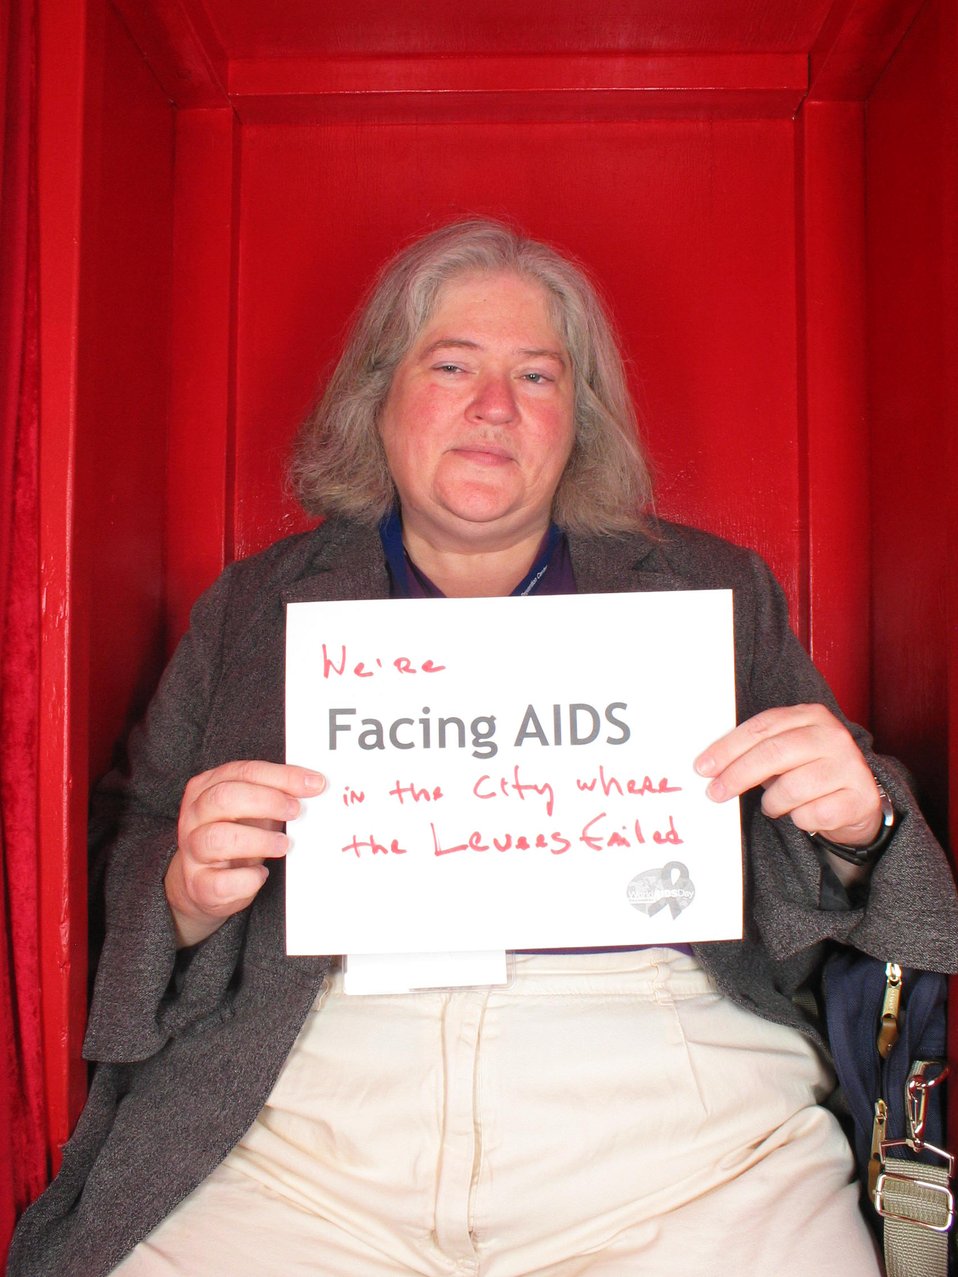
We're Facing AIDS in the city where the